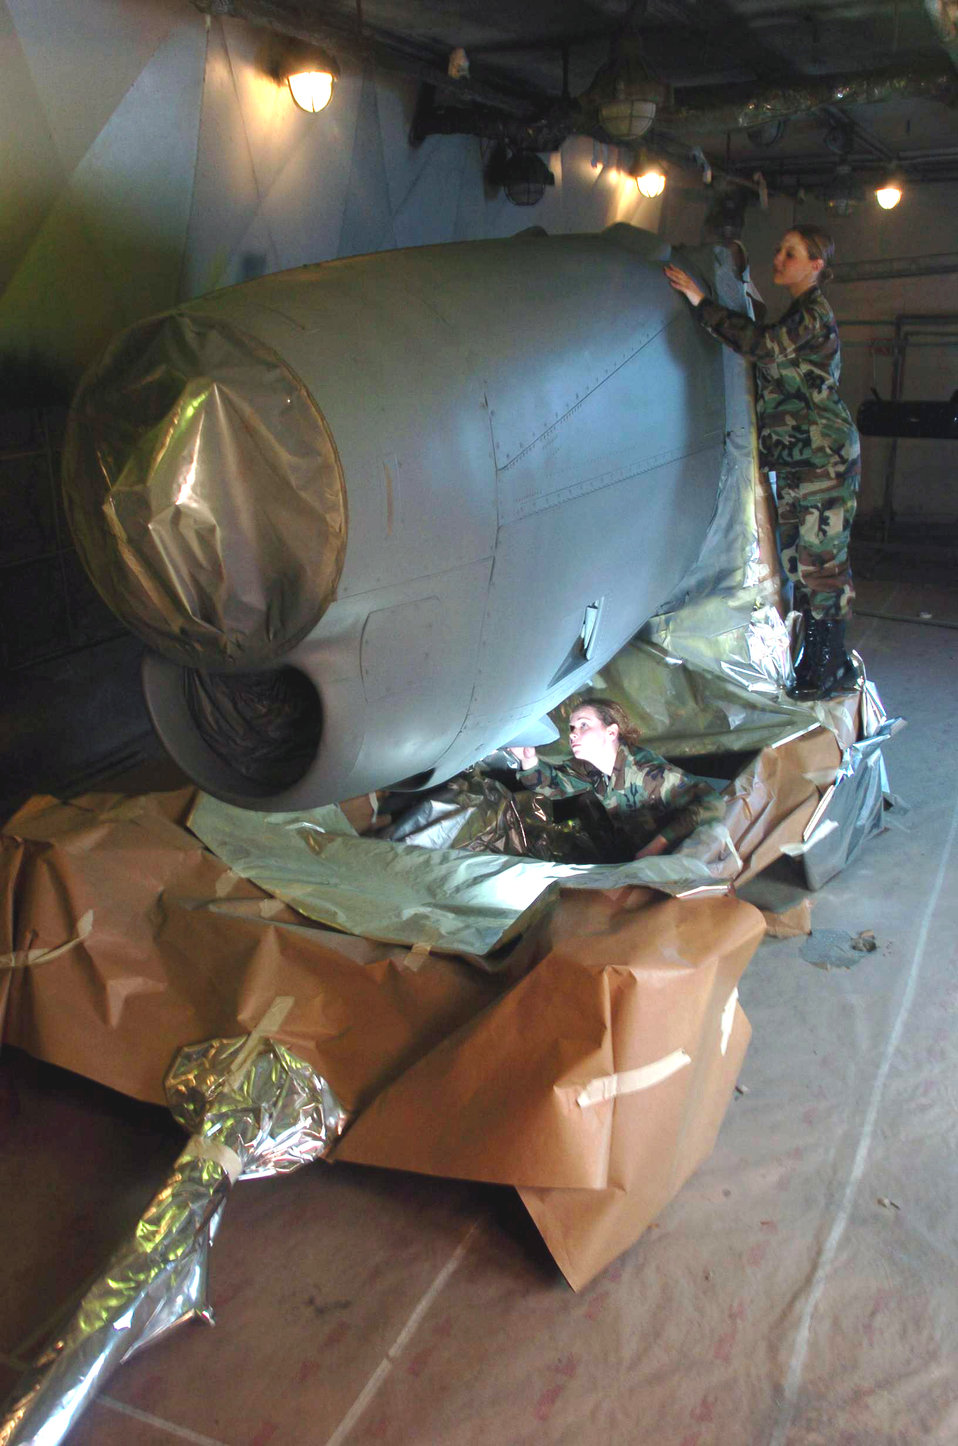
Inspectin' the engine

YOKOTA AIR BASE, Japan -- Airmen 1st Class Ashely Maddox (under the engine) and Shaetel Makey inspect a C-130 Hercules aircraft engine after it was painted here. The engines are periodically sanded, primed and painted to prevent corrosion. Both airmen are assigned to the 374th Maintenance Group's aircraft structural element flight.